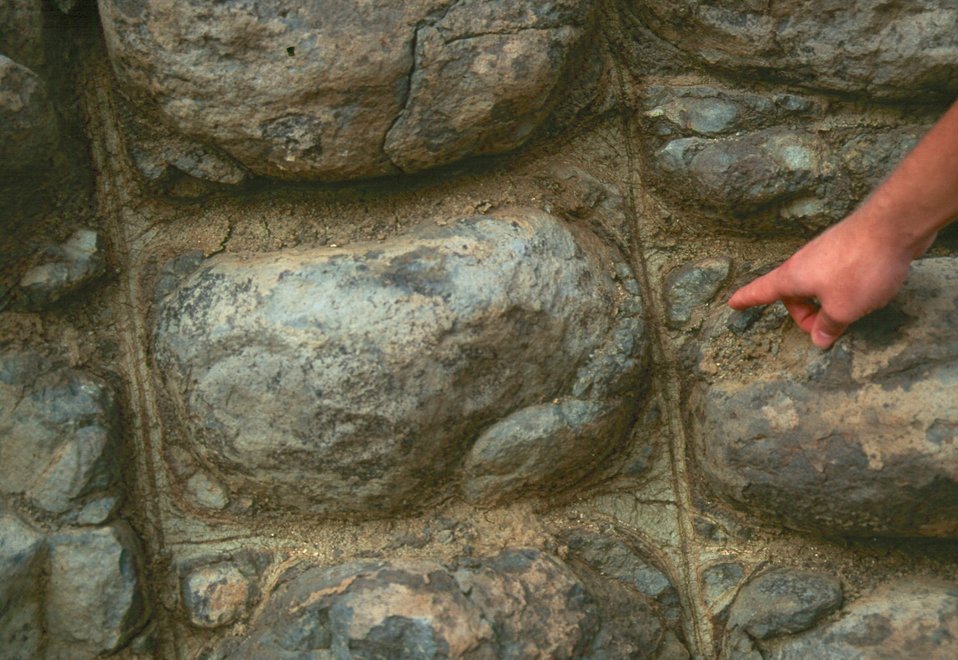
Weathering basalt column Grangeville Cottonwood Field Office UCSC Upper Columbia Salmon Clearwater District